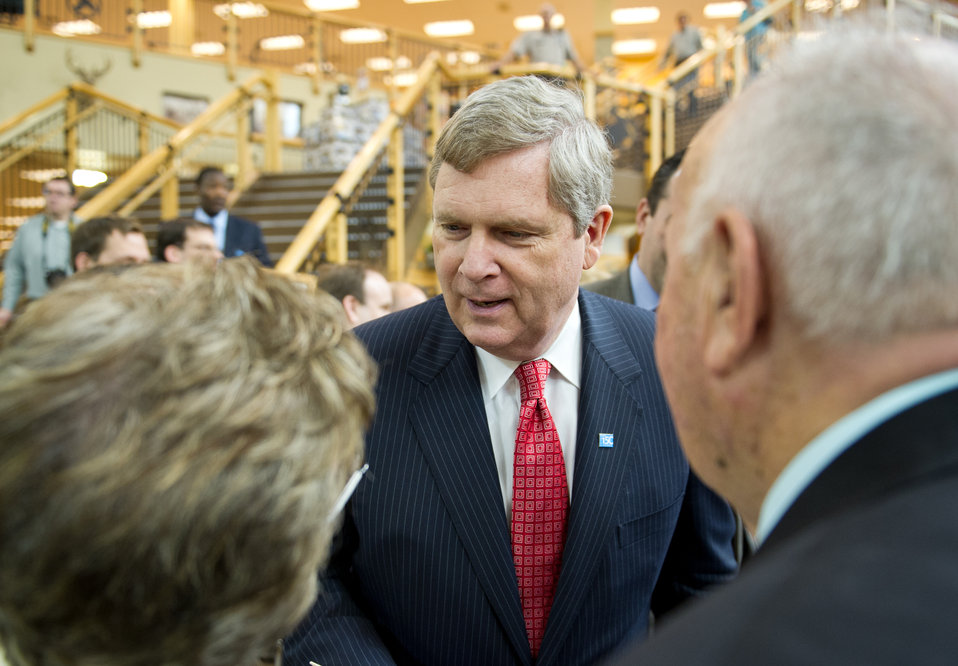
Agriculture Secretary Tom Vilsack highlighted the U.S. Department of Agriculture's conservation work at a Cabela's store in Dundee, MI, on March 16, 2012 .